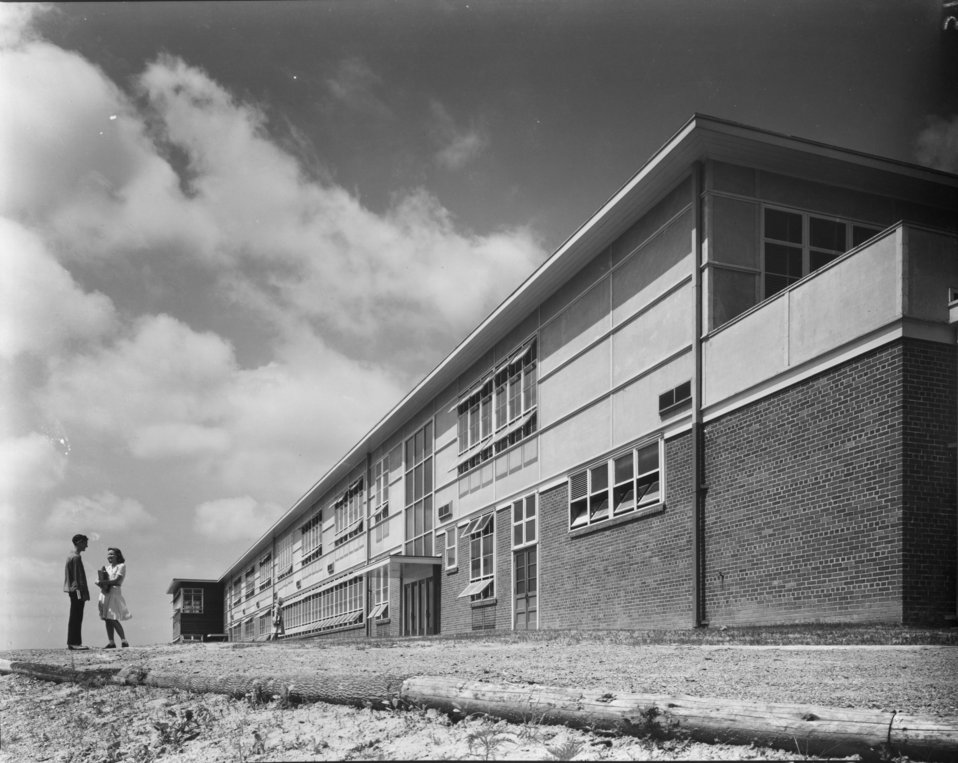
Schools at Oak Ridge